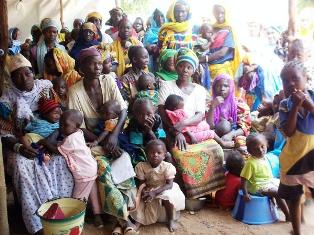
Sudanese refugees line up for medical consultations in Sam Ouandja Camp in the Central African Republic on November 13, 2007.